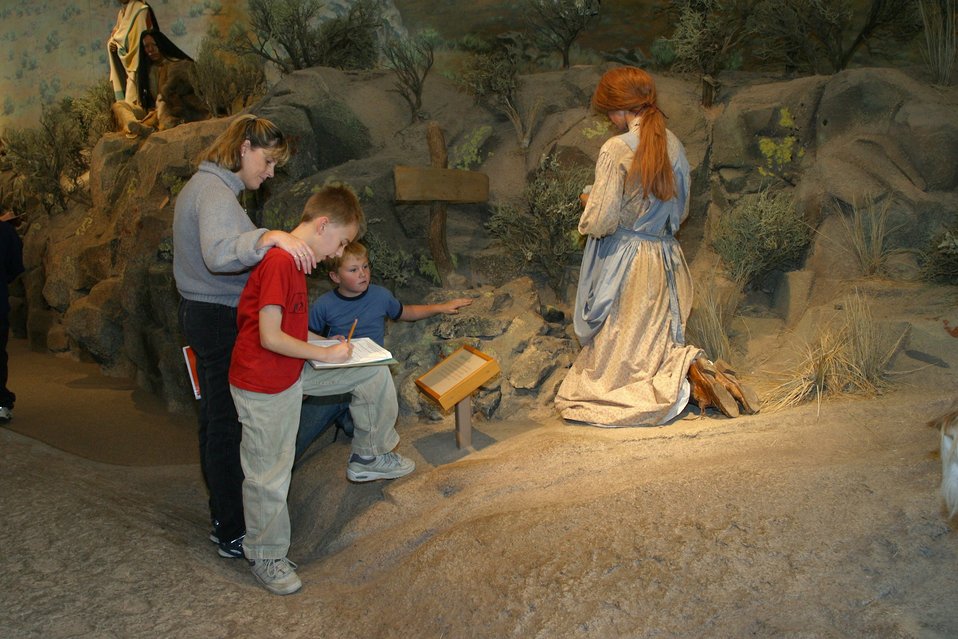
Hundreds of school children visit the National Historic Oregon Trail Interpretive Center every year.